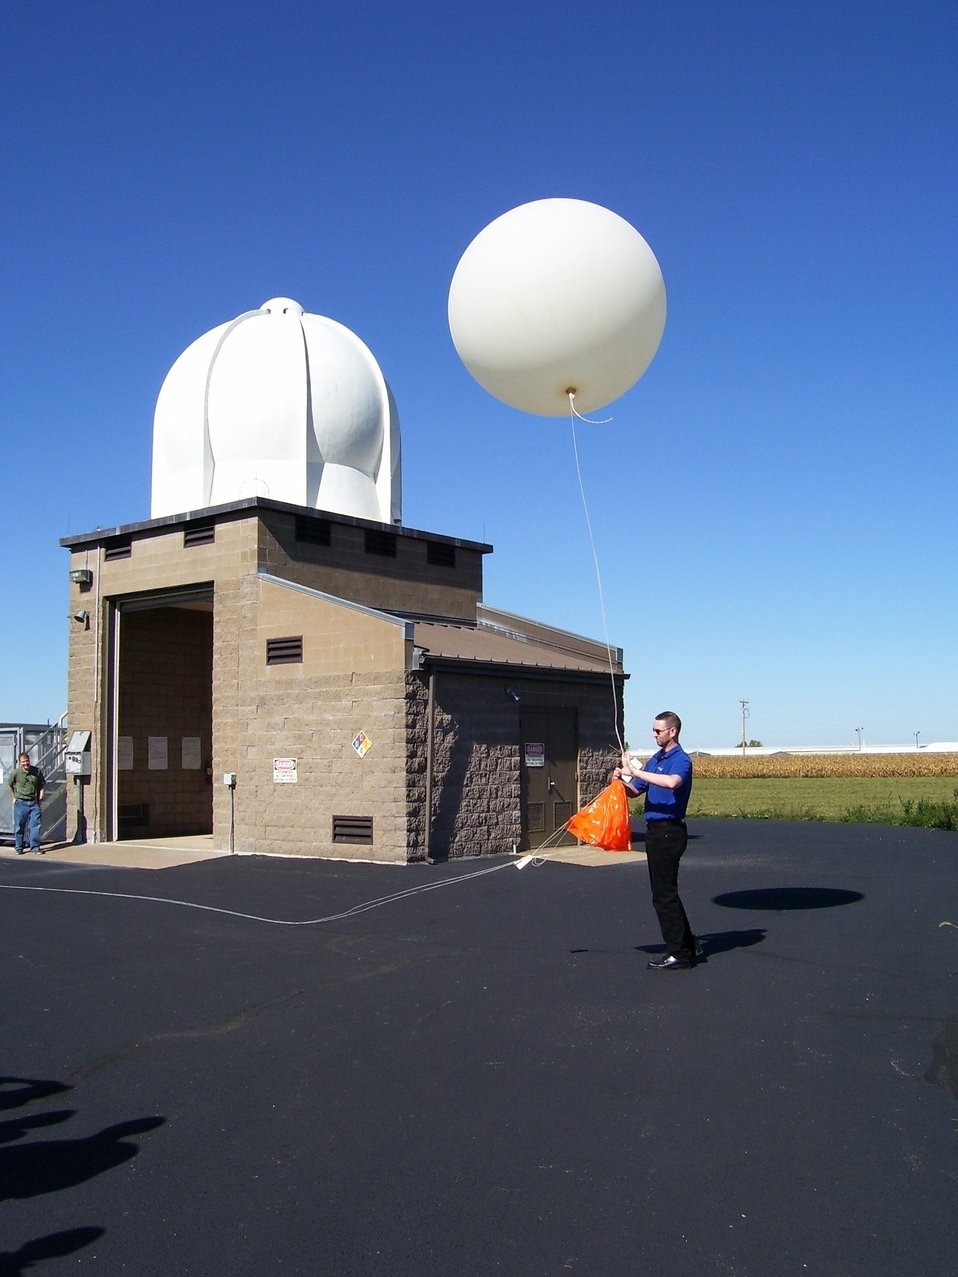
Tom (last name ?) launches a weather balloon during an open house.